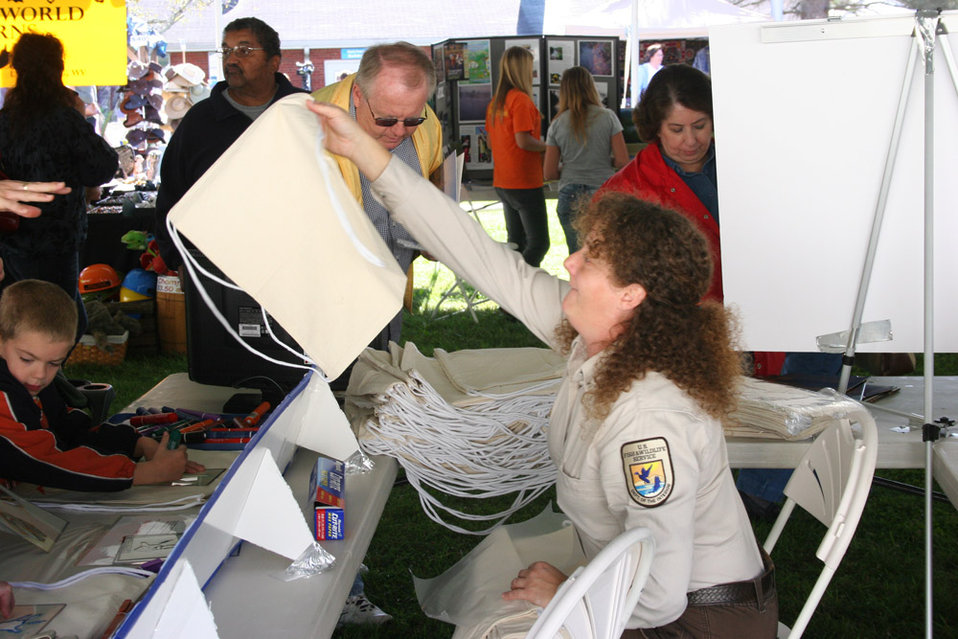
Freshwater Folk Festival (18)